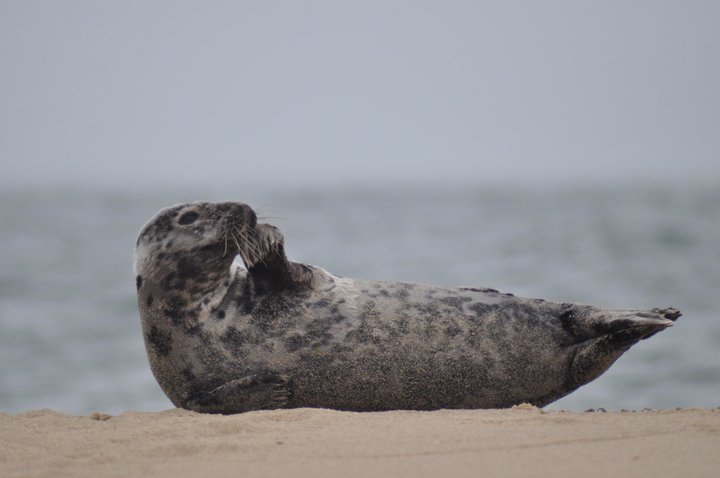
Seal at Nantucket National Wildlife Refuge in Massachusetts.